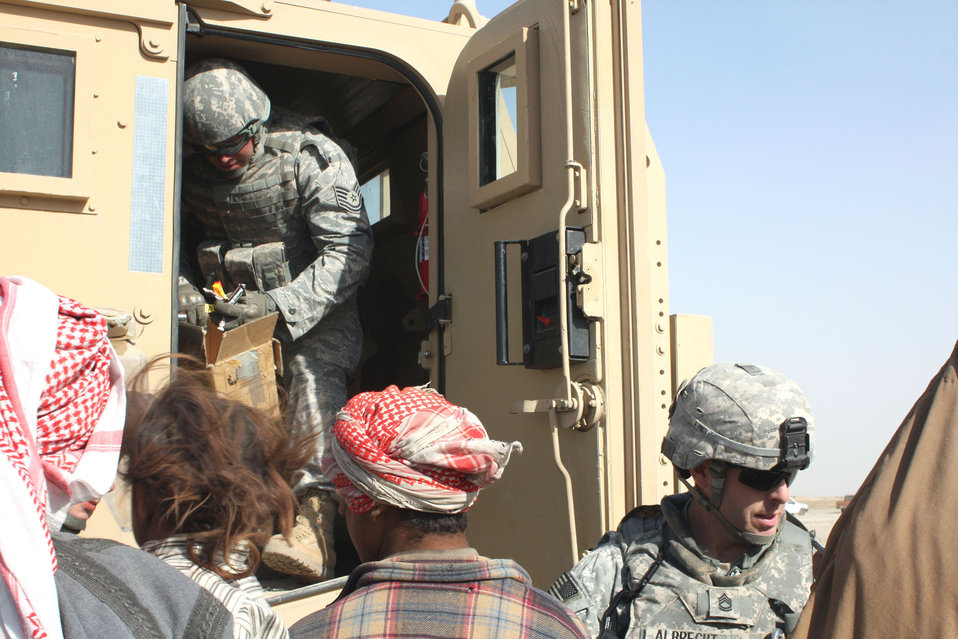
Airman joins Soldiers in aiding camps in Iraq

Tech. Sgt. Joseph Slysz and Army Sgt. 1st Class Kevin Albrecht sit with an Iraqi man at his home Dec. 16, 2008, outside Contingency Operating Base Adder near the city of Nasiriyah, Iraq. Sergeant Slysz is the NCO in charge of criminal intelligence for the 732nd Provost Marshal Office Det. 5. He is deployed from Edwards Air Force Base, Calif. Sergeant Albrecht is assigned to the 4th Special Troops Battalion, 4th Brigade Combat Team, 1st Cavalry Division.